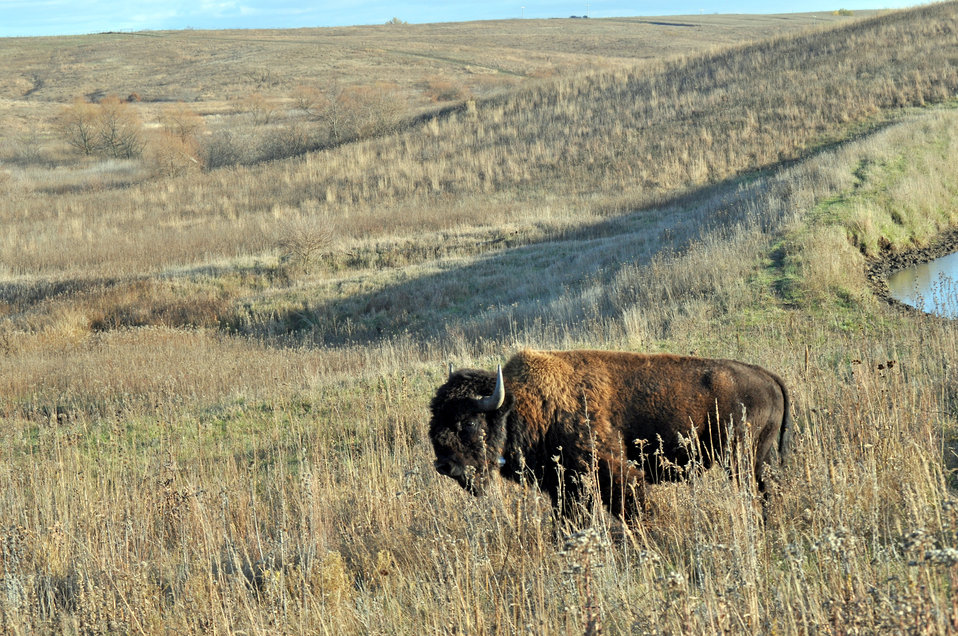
Bison at Dunn Ranch, an a prairie restored by The Nature Conservancy in northwest Missouri.